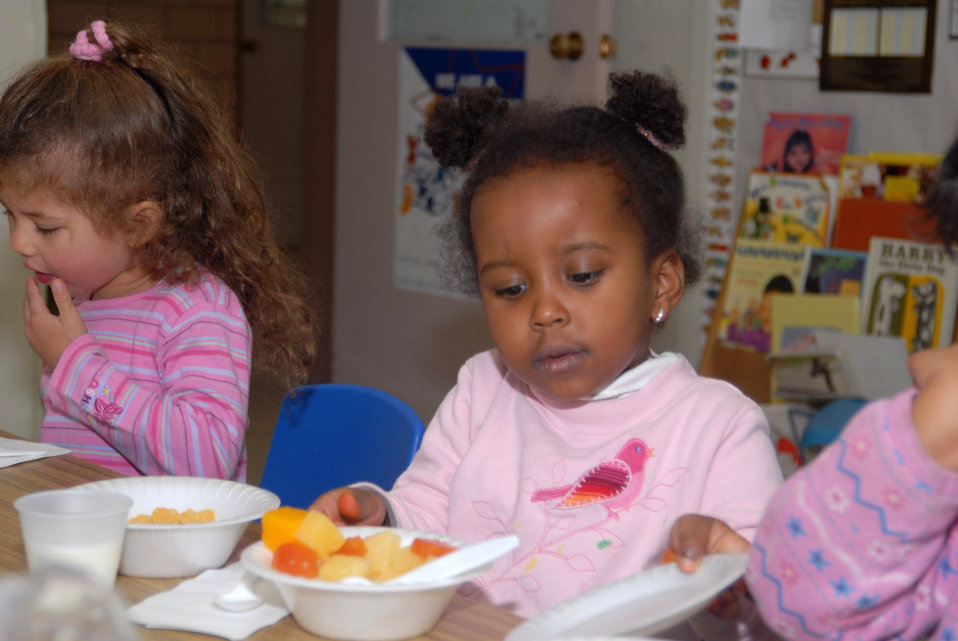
Youngsters at the Higher Horizons Day Care Center in Bailey Crossroads, VA., receive healthy food and snacks on October 25, 2006 under the U.S. Department of Agriculture (USDA) Food Nutrition Service’s (FNS) Child and Adult Care Food Program (CACFP) and Head Start program. CACFP plays a vital role in improving the quality of day care for children and elderly adults by making care more affordable for many low-income families. Each day, 3.2 million children receive nutritious meals and snacks through CACFP.